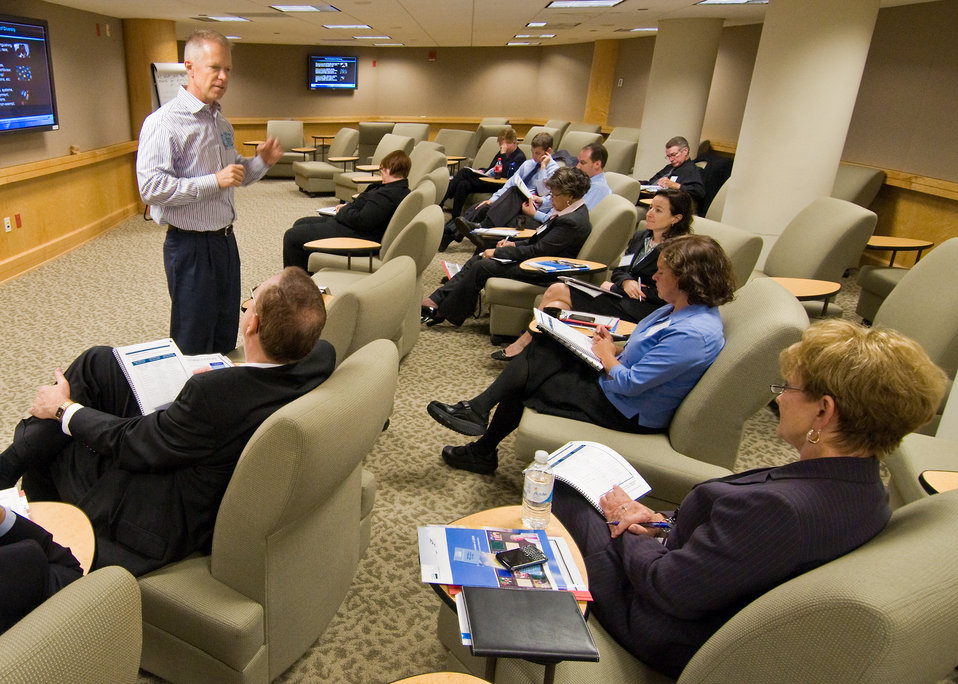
Scott Horton, Innovations International discusses the reason and the purpose for the Department of Agriculture, Secretary's Transformational Training during a session in Washington, DC, Wednesday, September 15, 2010. Department of Agriculture executives, managers and employees are participating in the transformational training to help improve the civil rights of clients and employees. USDA Photo 10di1492-28 by Bob Nichols.